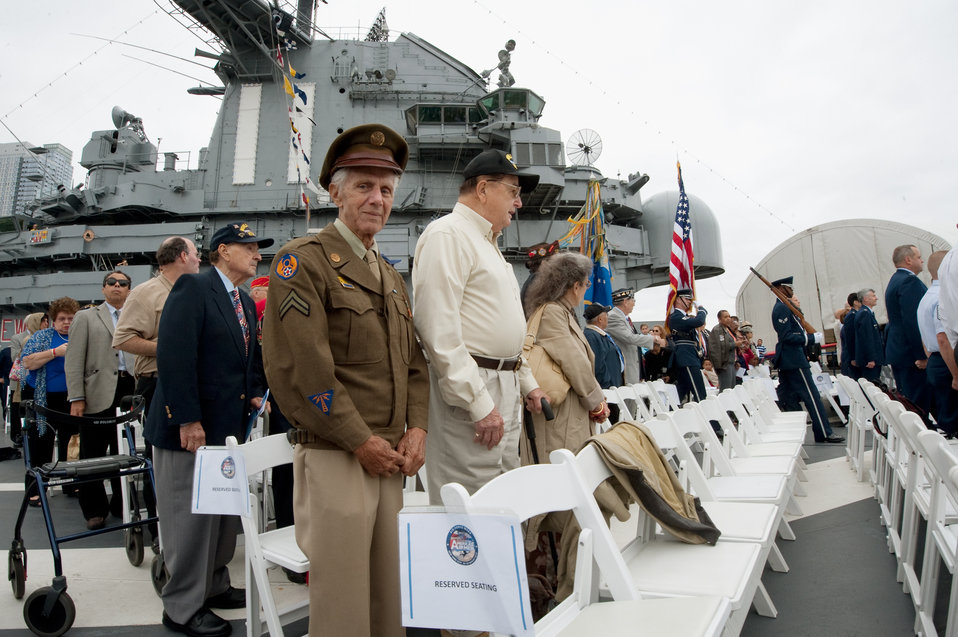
Air Force Week New York City Proclamation Ceremony

Frank Milano (brown uniform) stands while the U.S. Air Force Honor Guard Drill Team leads the arrival of the Official Party of the Air Force Week New York City proclamation ceremony at the USS Intrepid on Aug. 24, 2010. Mr. Milano of New York City, was a Corporal in the Army Air Force, stationed in Europe with the 9th Air Force during World War II. The team is from Bolling Air Force Base. The event at the Intrepid Sea, Air & Space Museum was highlighted by a six-ship flyover by the USAF Thunderbirds. The Honorable Michael Donley, Secretary of the Air Force attended, along with General Raymond Johns, Commander of Air Mobility Command. The Police Commissioner of the City of New York, the Honorable Raymond Kelly, represented NYC. Mr. Greg Kelly of